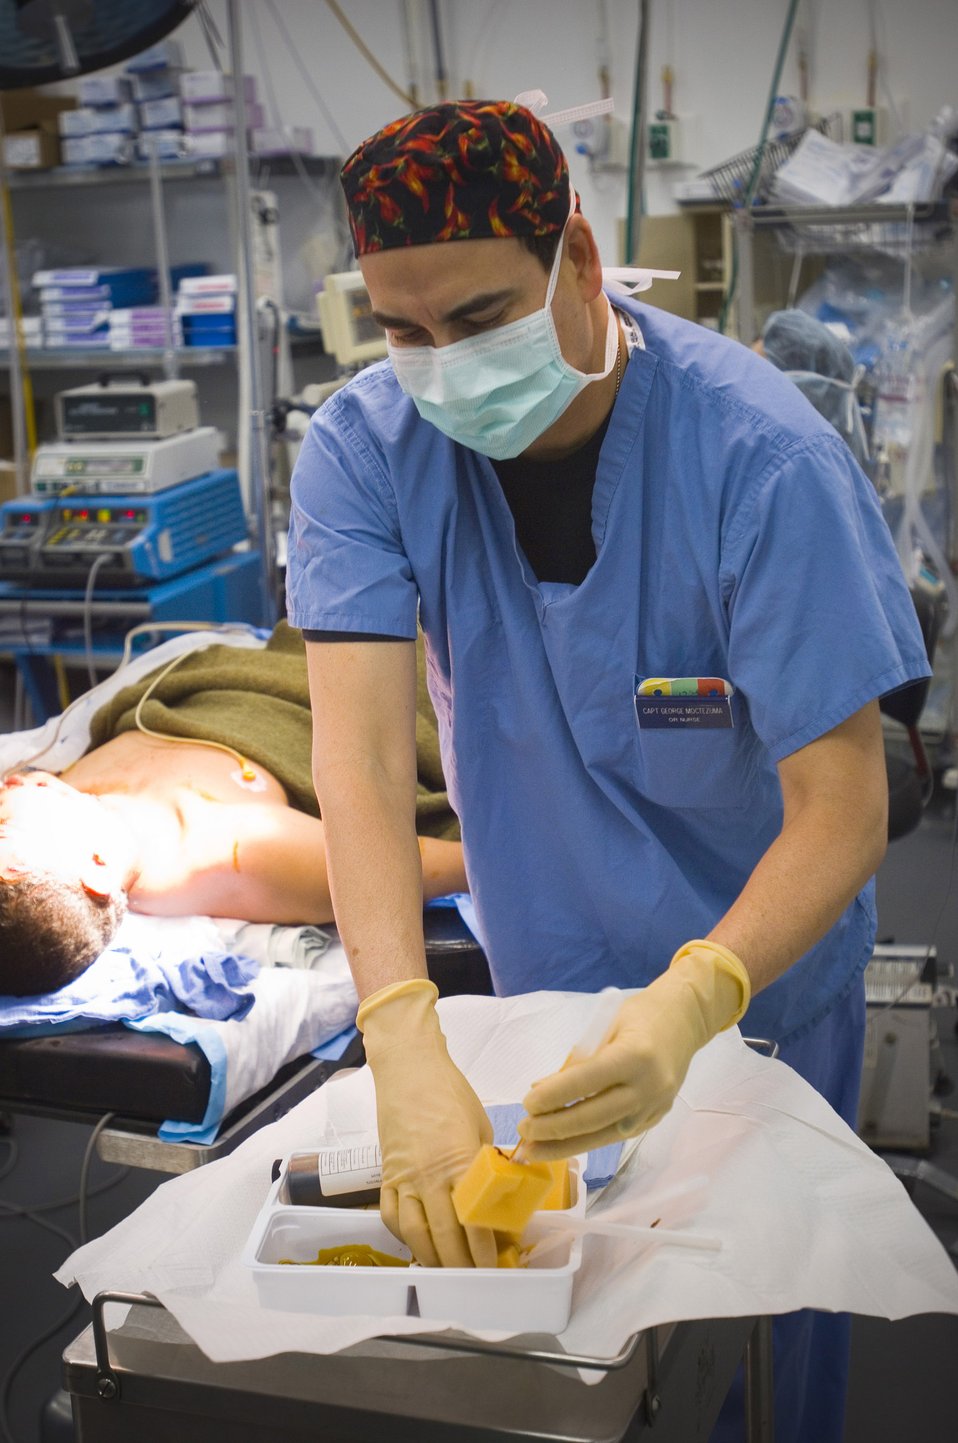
Combat Nurses: The OR

Capt. George Moctezuma, an operating room nurse, prepares to scrub a wounded patient before a surgical procedure Dec. 28 at the Air Force Theater Hospital at Balad Air Base, Iraq. Captain Moctezuma received his degree in nursing as an enlisted medic and worked as a civilian nurse in his off-duty time before earning his commission. Captain Moctezuma is deployed from Wilford Hall Medical Center, San Antonio, Texas.